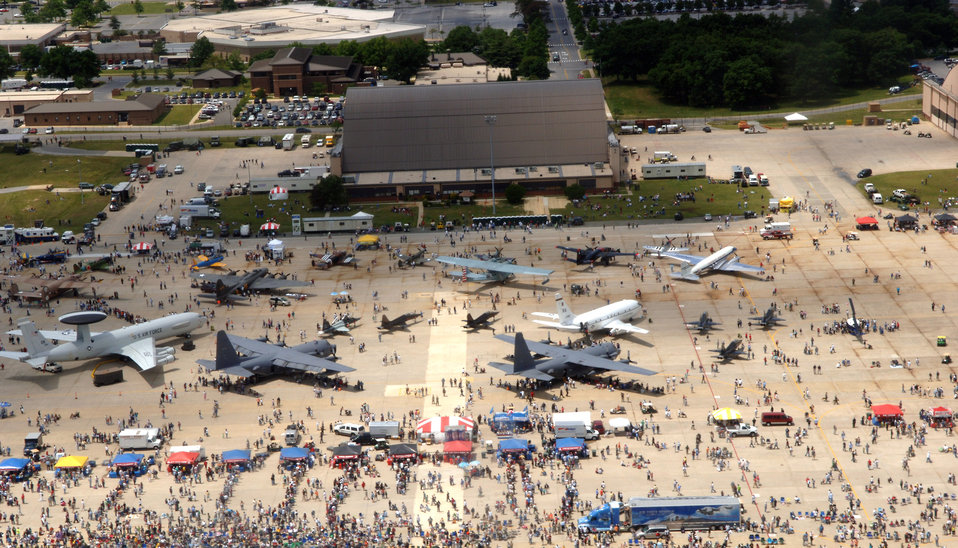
2006 Joint Service Open House

Andrews Air Force Base, Md., was the site of the 56th annual Department of Defense 2006 Joint Service Open House on Saturday, May 20, 2006. The three-day event highlighted American aviators, aircraft and technology.